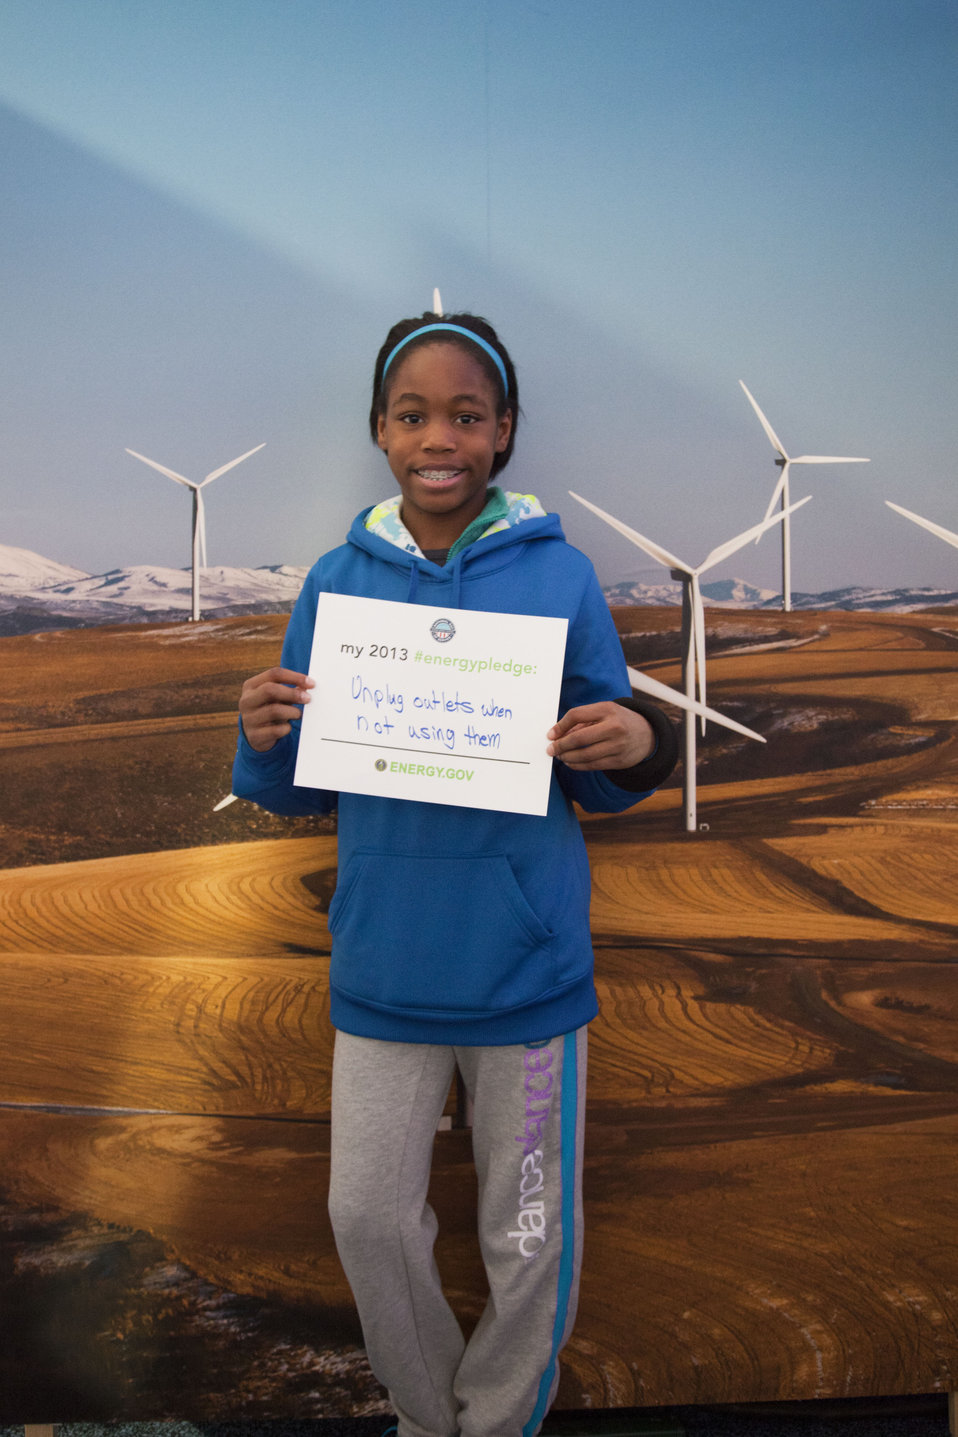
What's your #energypledge?